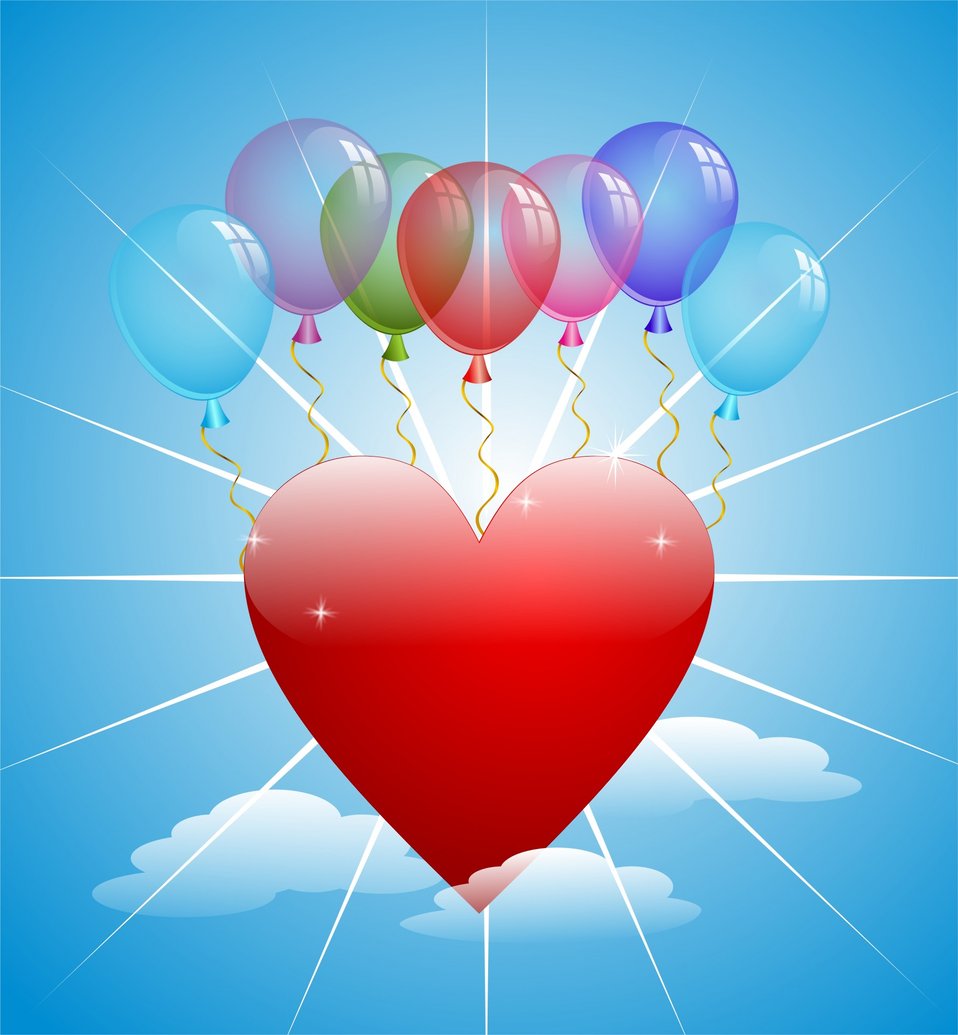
Balloons and heart

Balloons and a big heart on the background of sky.